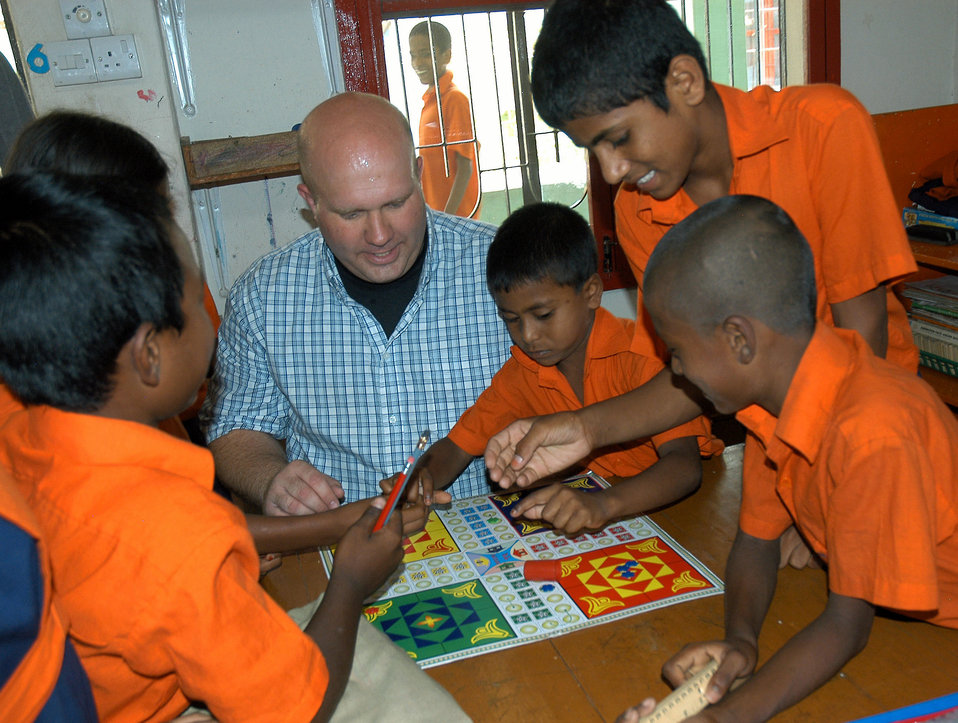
Special operations Airmen reach out to Bangladesh school

Capt. Darin Wheeler plays a game with fifth graders from Eglal's ABC School April 27 in Dhaka, Bangladesh. Captain Wheeler and members of the 353rd Special Operations Group are in Bangladesh for joint combined exercise training with the Bangladesh air force.